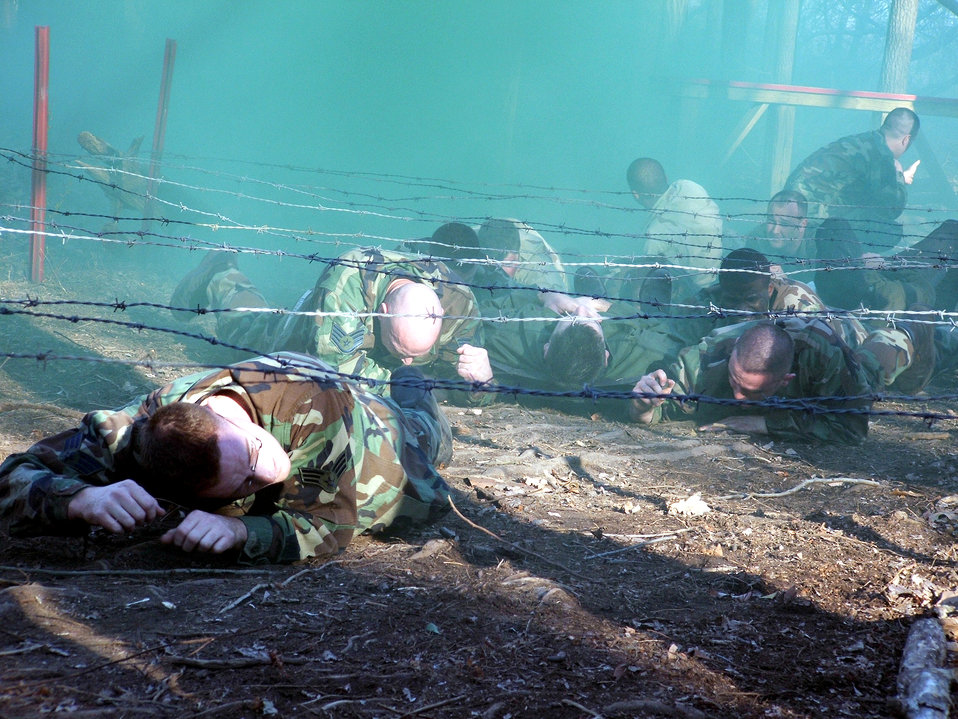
Phoenix Raven training highlights needs of todays security forces Airman

Students in the Air Force Phoenix Raven Class 06-D at Fort Dix, N.J., move a